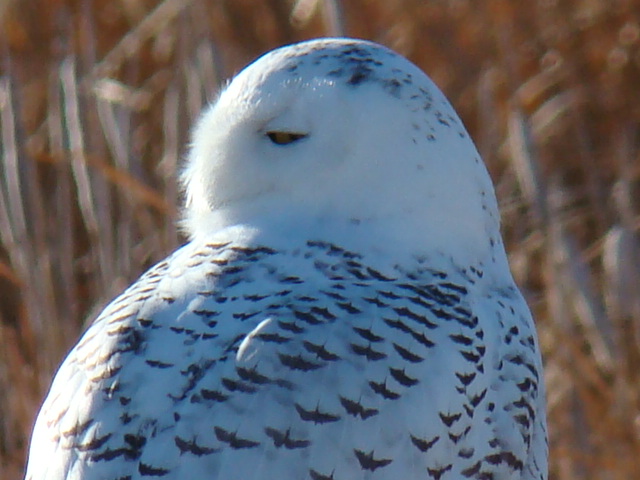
I've Got My Eye On You!

Snowy Owl keeping one eye out for danger at Benton Lake NWR.